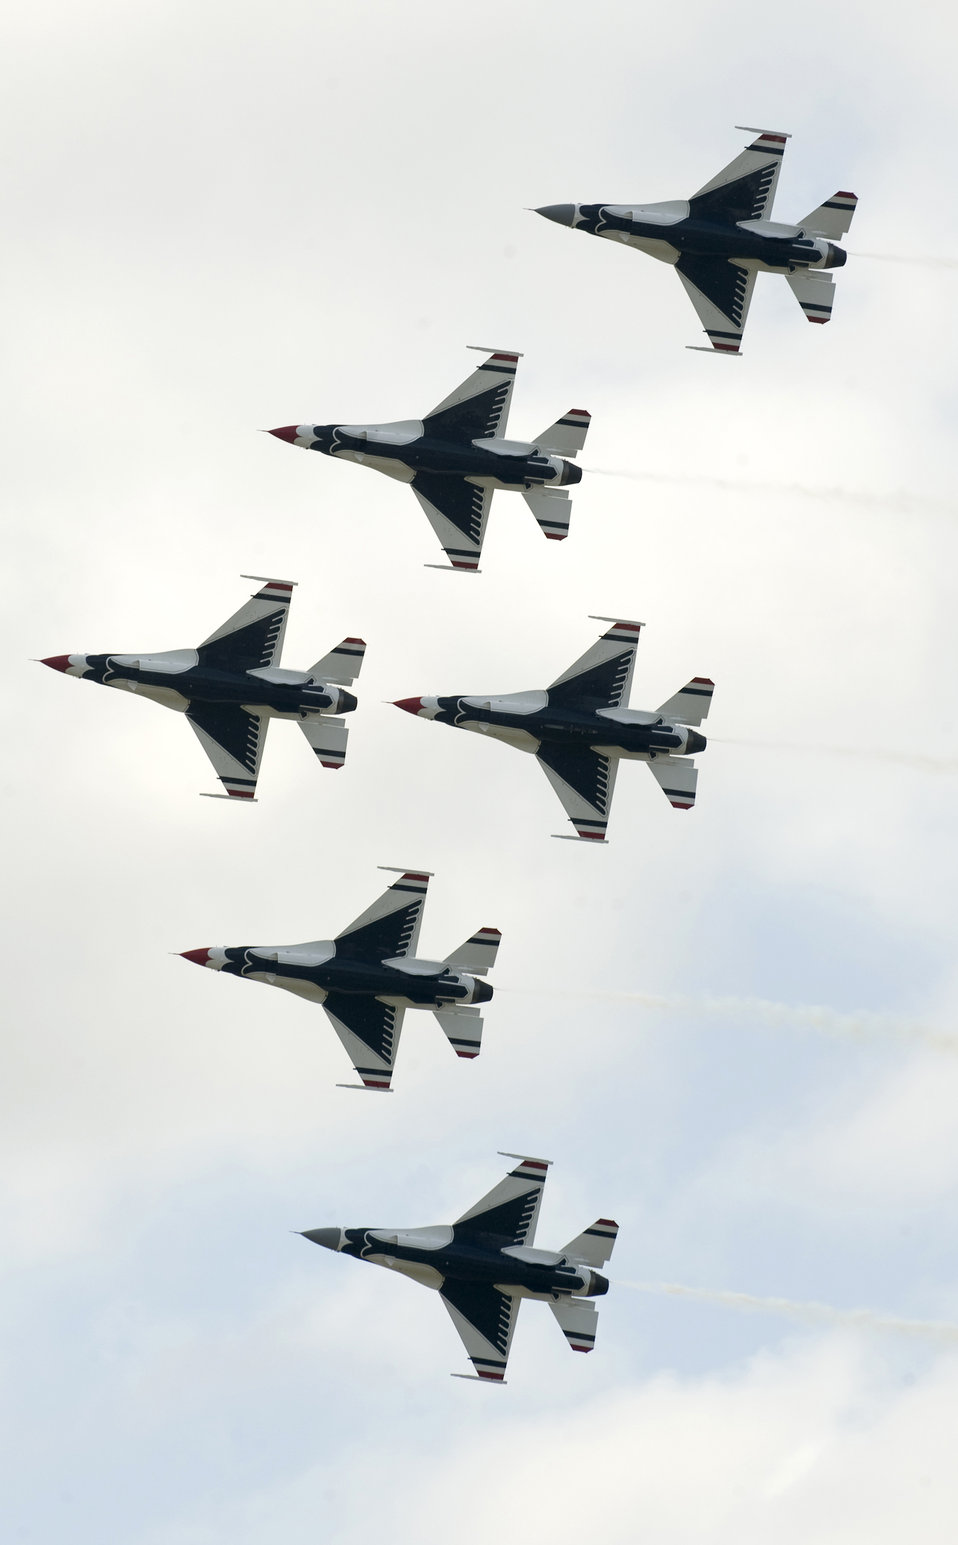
Teamwork ensures Thunderbirds performance

The Thunderbird solo aircraft (at the top and bottom of the formation featuring gray radomes) join up with the Thunderbirds diamond formation to build the six-ship delta formation April 4 at Keesler Air Force Base, Miss.